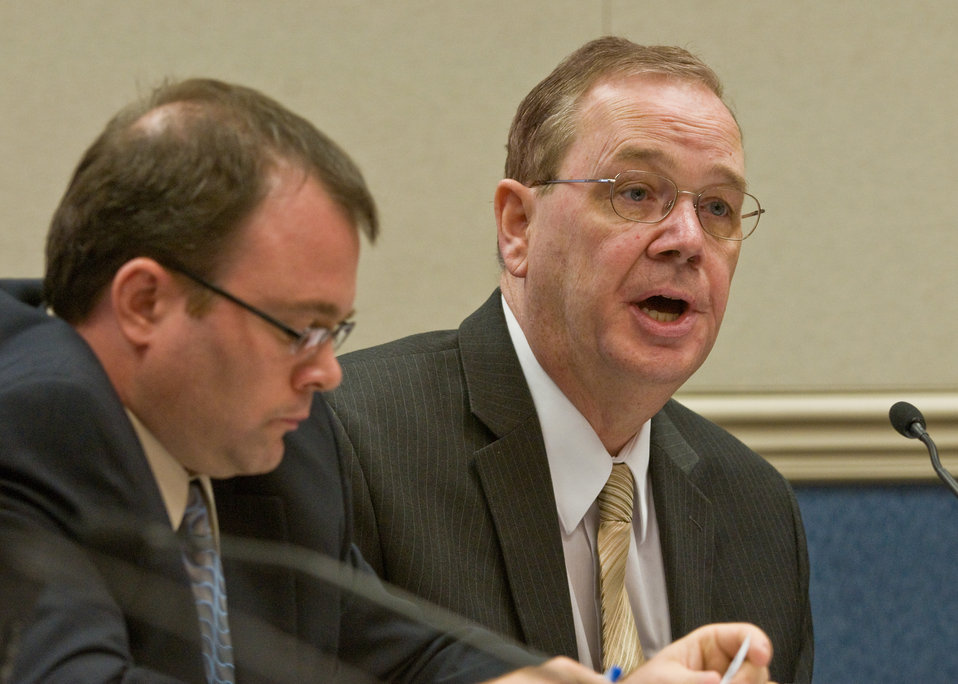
U.S. Department of Agriculture Under Secretary for Rural Development, Dallas Tonsager (right), and Farm Service Agency Administrator Jonathan Coppess, spoke to aviation and biofuel industry executives at the 'Farm to Fly, Sustainable Aviation Biofuel Roundtable” at the United States Department of Agriculture in Washington, DC, Wednesday, July 14., 2010. Both gentlemen mentioned the importance of biofuels to the economy of rural America. USDA Photo 10di1441-006.